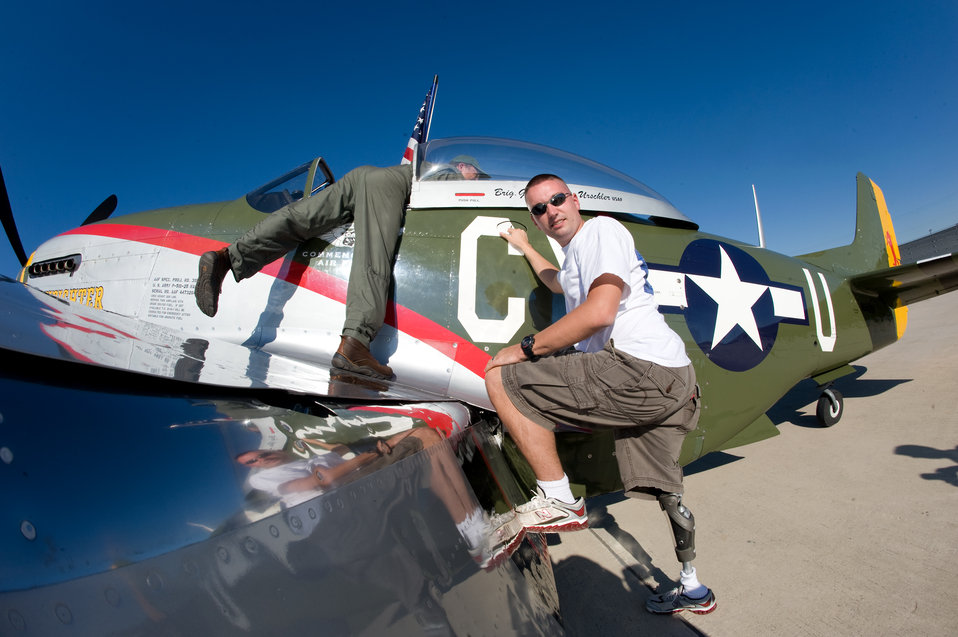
Warrior Flight